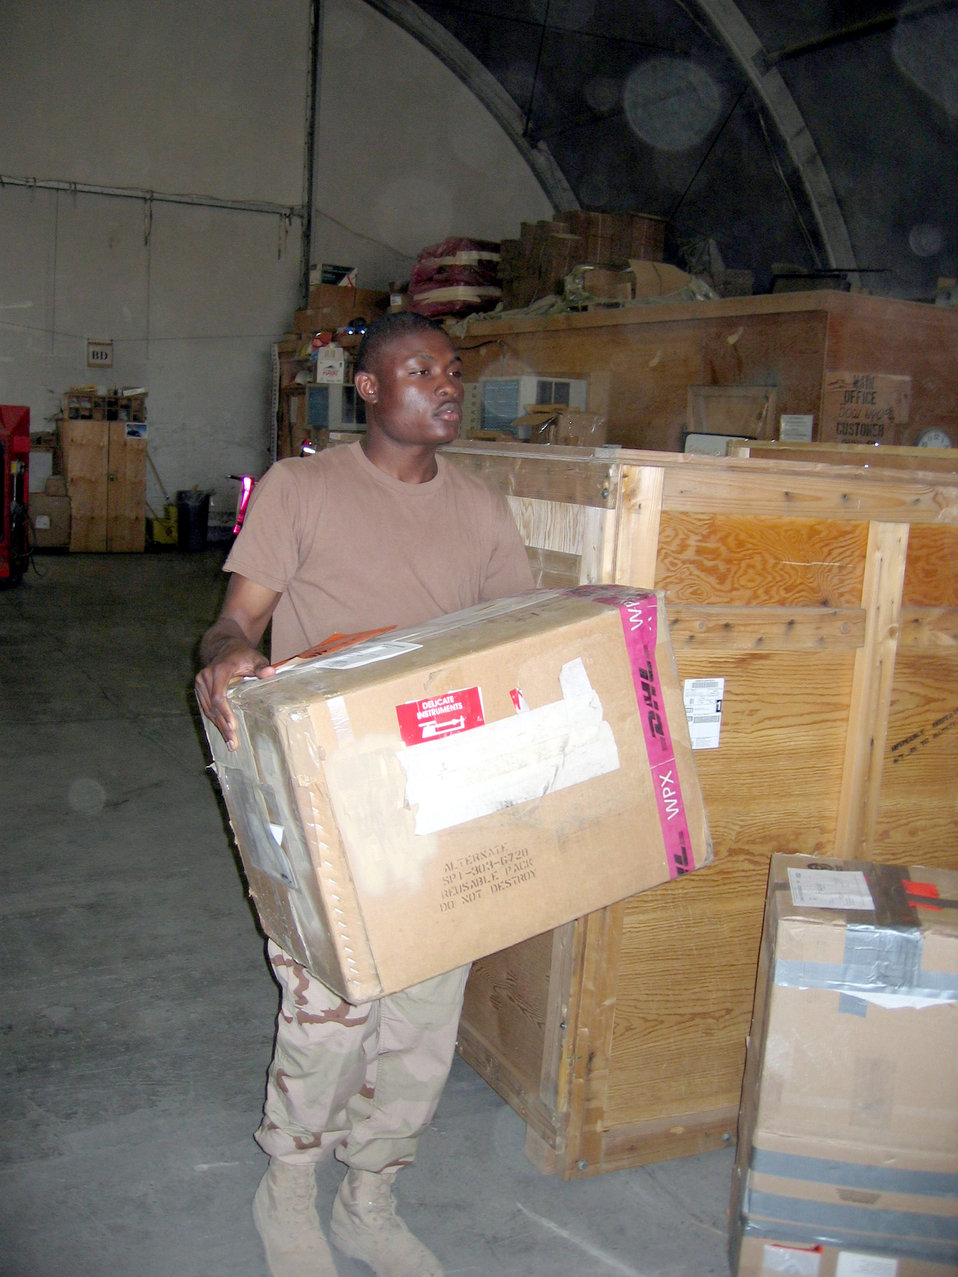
Supply Airmen keep deployed essentials on shelf

KARSHI-KHANABAD AIR BASE, Uzbekistan -- Airman Guesley Leger carries an inbound shipment to its destination in the supply shop here. He is a supply apprentice with the 416th Expeditionary Mission Support Squadron's supply section and is deployed from Royal Air Force Mildenhall, England.